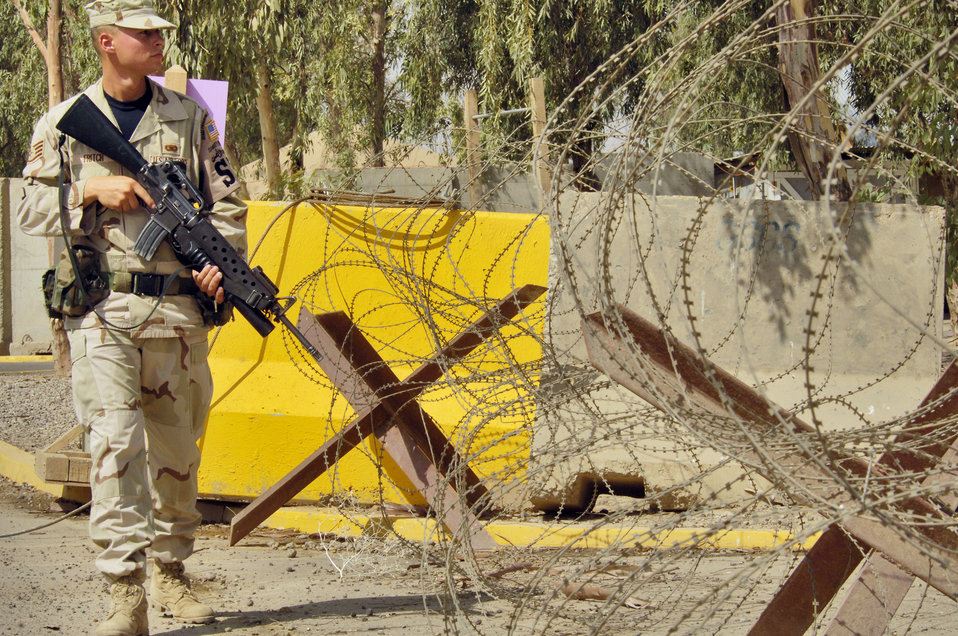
Standing guard

Staff Sgt. Glenn Fritch stands guard at an entry control point at Balad Air Base, Iraq. He is assigned to the 332nd Expeditionary Security Forces Squadron.